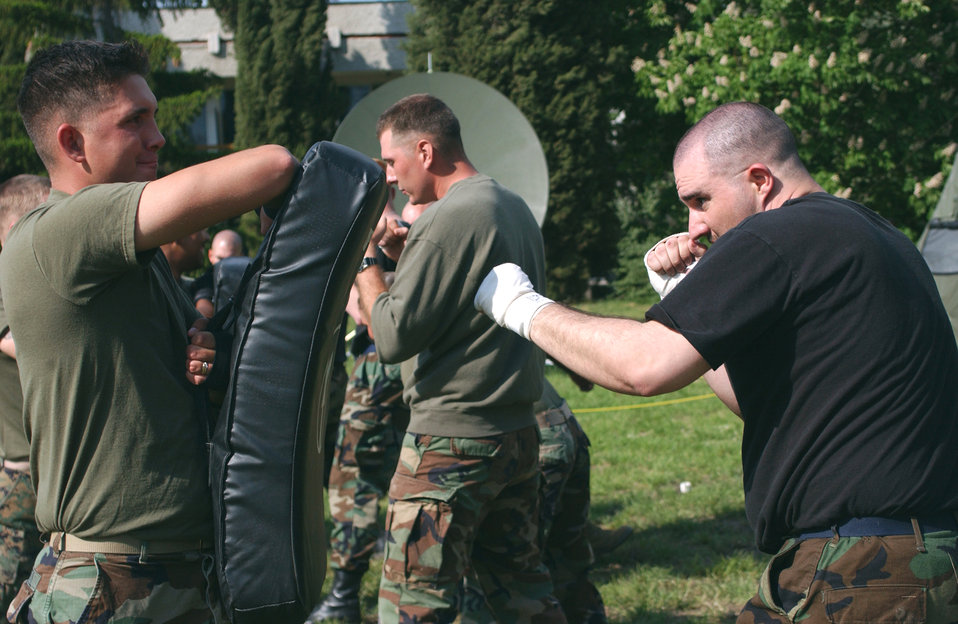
Combined Endeavor

CAMP SARAFOVO, Bulgaria -- Staff Sgt. Eric Earp (right) and Marine Corps Sgt. Nick Swindell focus on basic martial arts maneuvers during the Marine Corps martial arts training program here May 16. Sergeant Earp earned his tan belt while deployed here. He is assigned to the 735th Expeditionary Communications Squadron at Ramstein Air Base, Germany. Sergeant Swindell is deployed from Camp Lejeune, N.C.